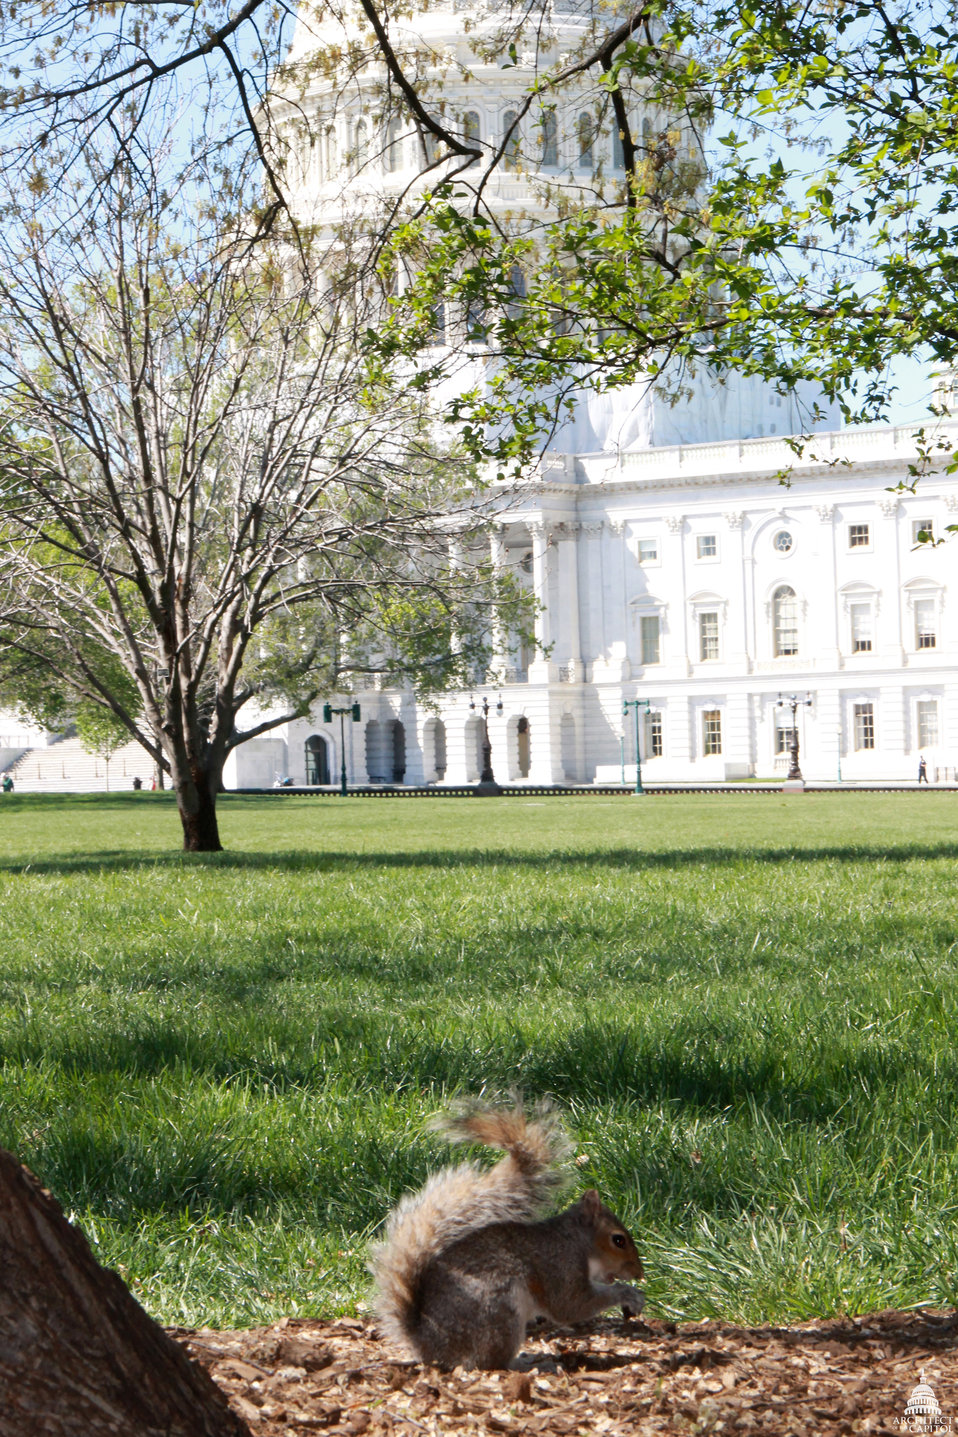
Squirrel on Capitol Square on the East Front of the U.S. Capitol Building. Take a look inside the AOC's archives and learn about the history of the squirrel on the U.S. Capitol Grounds.